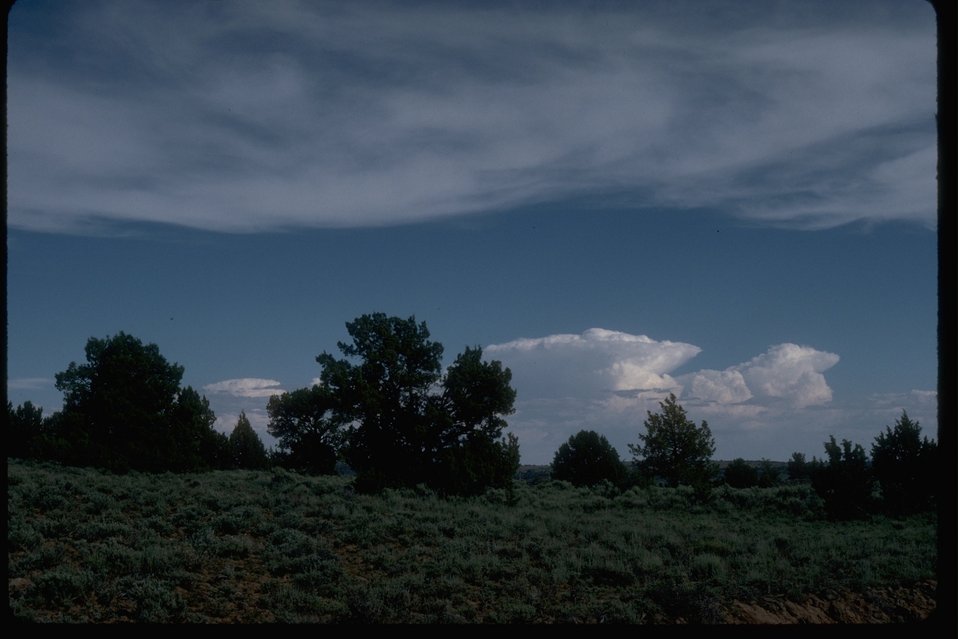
A juniper and lower sage savannah in Central Oregon.